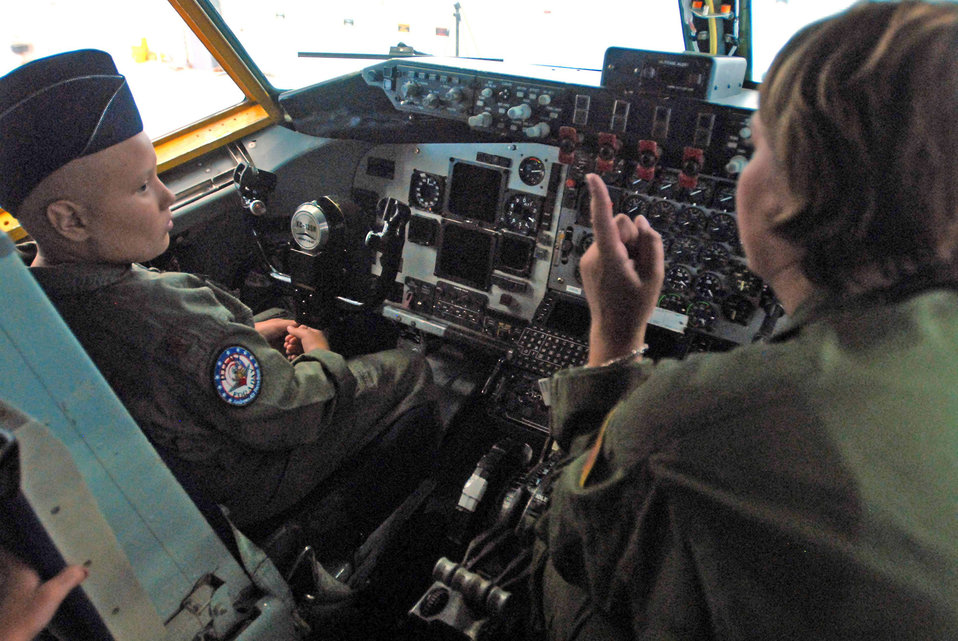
Pilot for a day leaves Andrews with memories for a lifetime

Kayla Kiley learns about the KC-135 Stratotanker while sitting in the cockpit during the Pilot for a Day Program July 23 at Andrews Air Force Base, Md. Kiley is currently battling cancer.